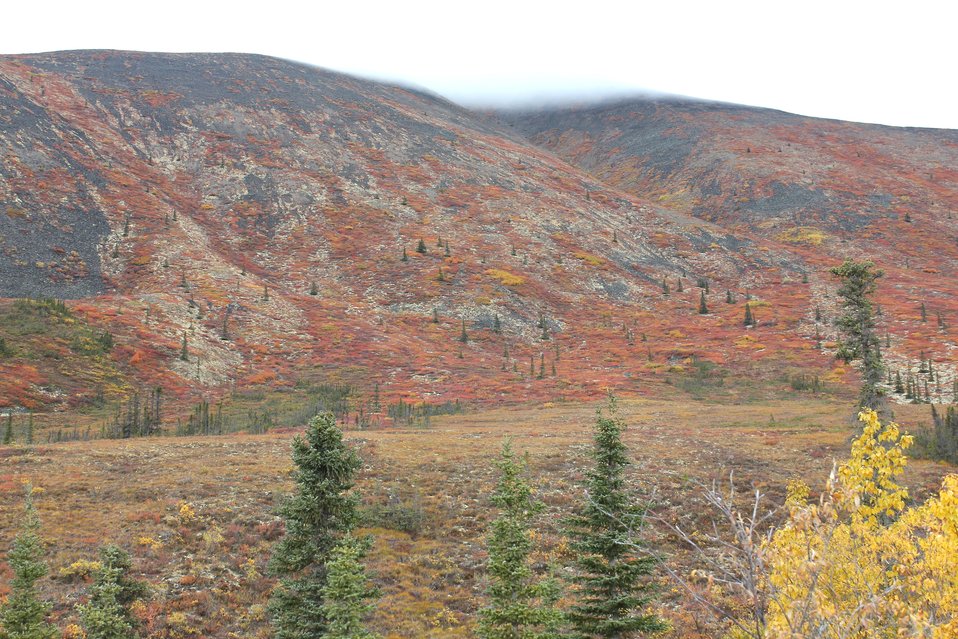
Autumn on the tundra north of Whitehorse in the Ogilvie Mountains.